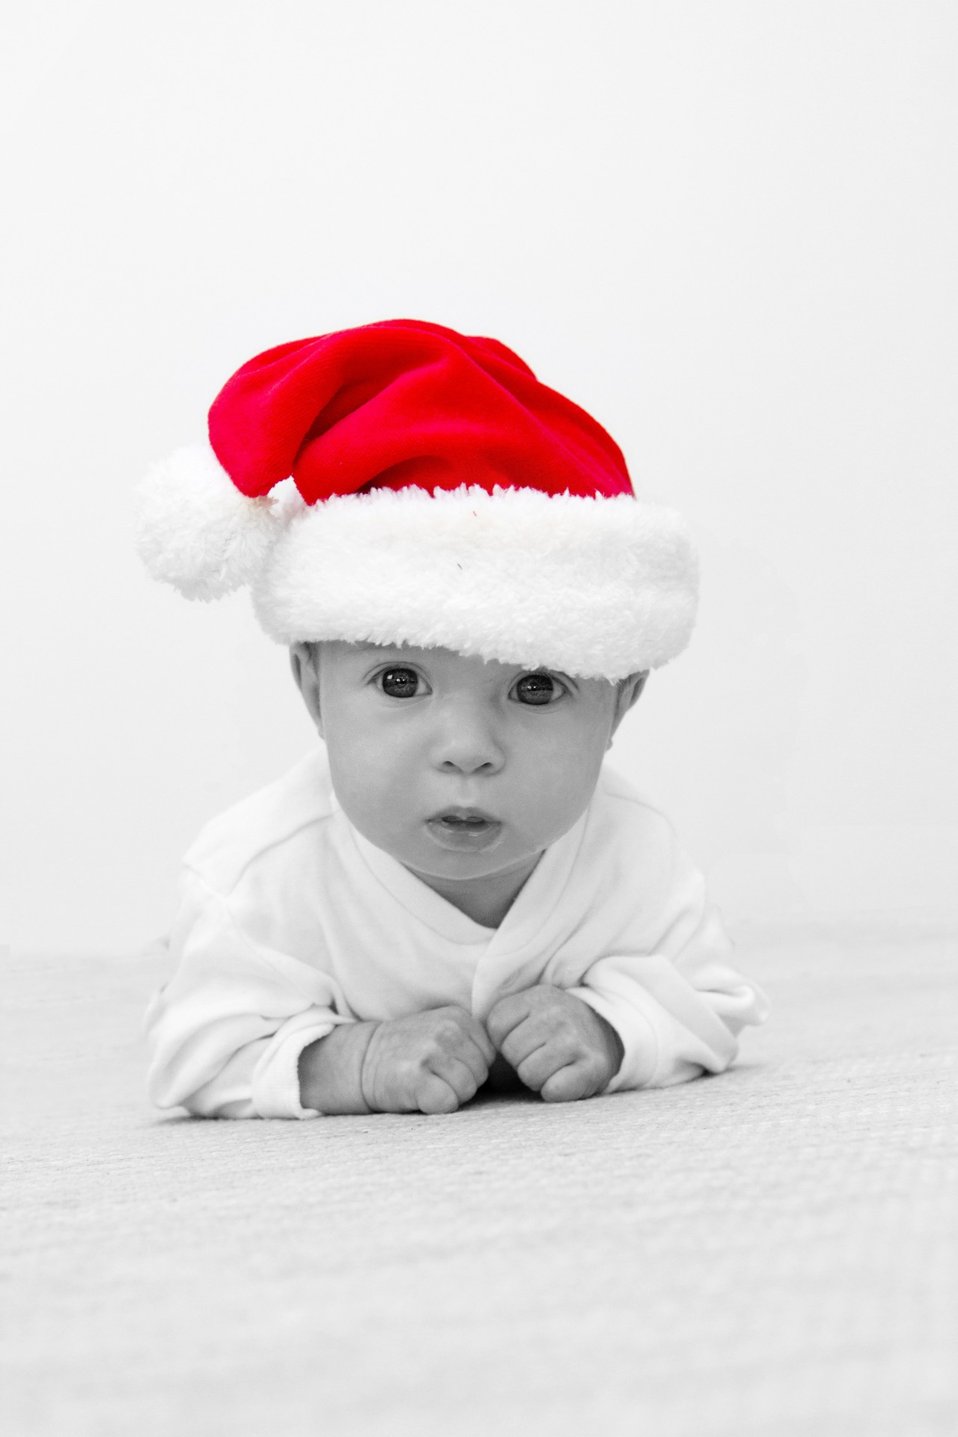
Baby with santa's hat black and white.